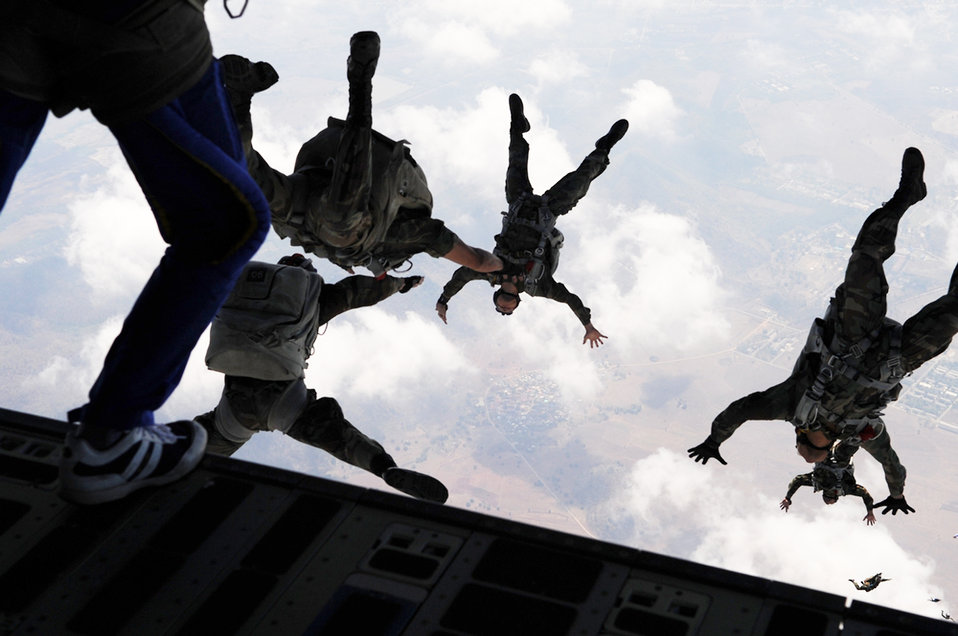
COPE TIGER 2010

U.S. Air Force and Royal Thai Air Force parachute team members jump from the back of a C-17 Globemaster III during Cope Tiger 2010 March 3, 2010 at Dom Muang Royal Thai Air Force Base, Thailand.